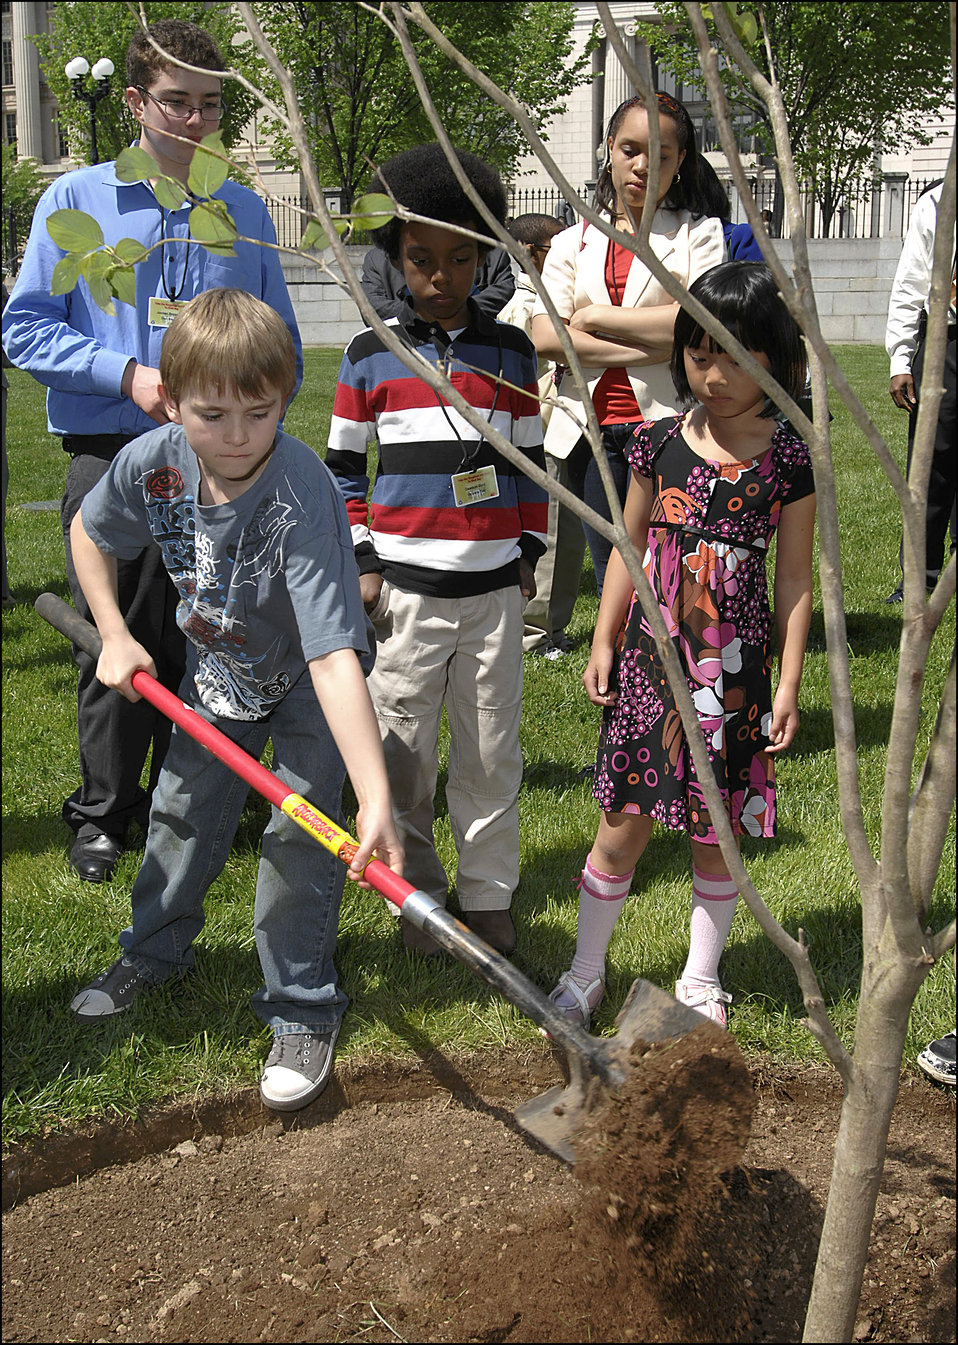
Earth Day/Take Your Children to Work Day, 4/22/10

Children participating in Take Your Children to Work Day helping plant a tree in front of the Treasury Department on Earth Day, April 22, 2010.